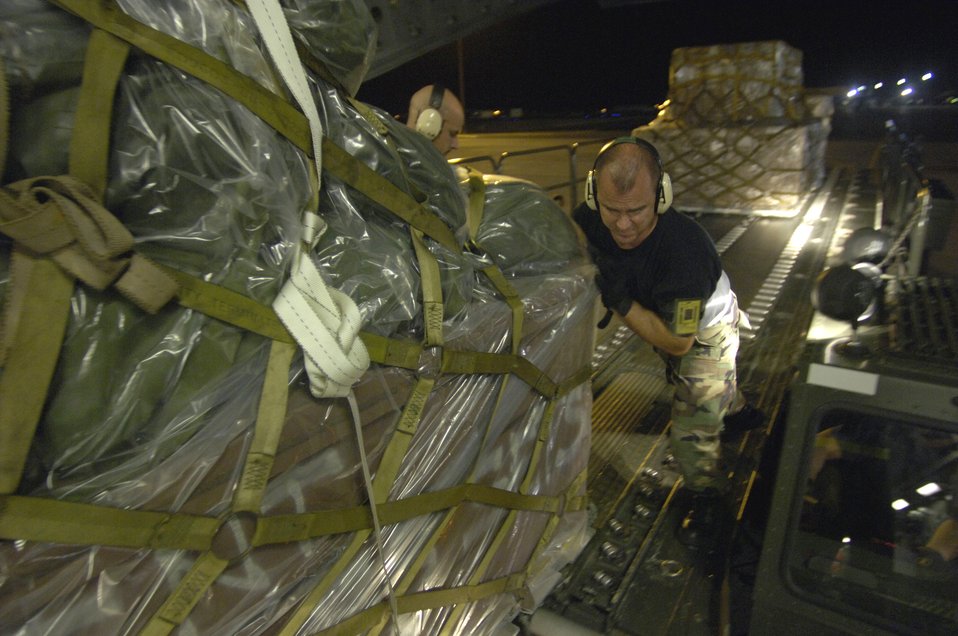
Philippine relief

HICKAM AIR FORCE BASE, Hawaii (AFPN) -- Tech. Sgt. Phillip Patterson pushes a cargo pallet on to a C-17 Globemaster III to support relief efforts in the Philippines. The composite C-17 squadron of active duty and Hawaii Air National Guard loaded the pallets Feb. 21 to carry military rations, water, cots, tents and personnel from the 15th Airlift Wing to help out with the mudslide disaster. Sergeant Patterson is from the 735th Air Mobility Squadron at Hickam AFB, Hawaii.